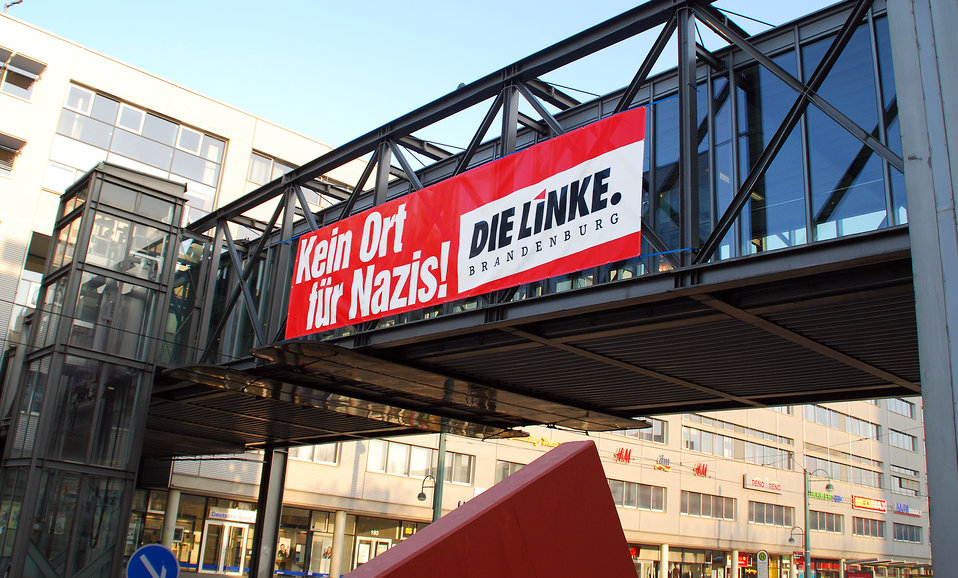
Proteste gegen den Nazi-Aufmarsch am 24.3.2012 in Frankfurt (Oder)